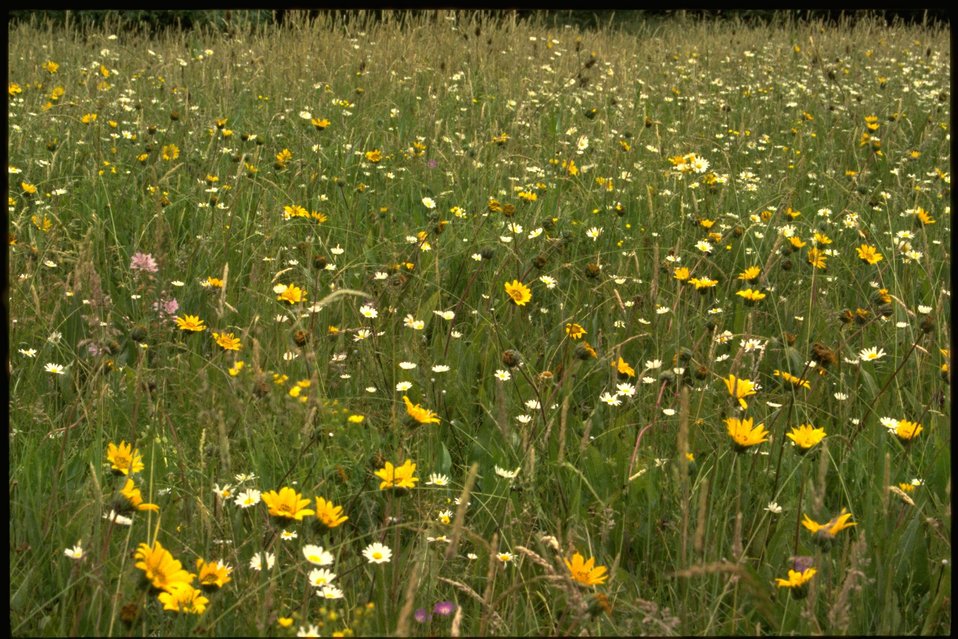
Scenic view of McGowan Meadow wildflowers.